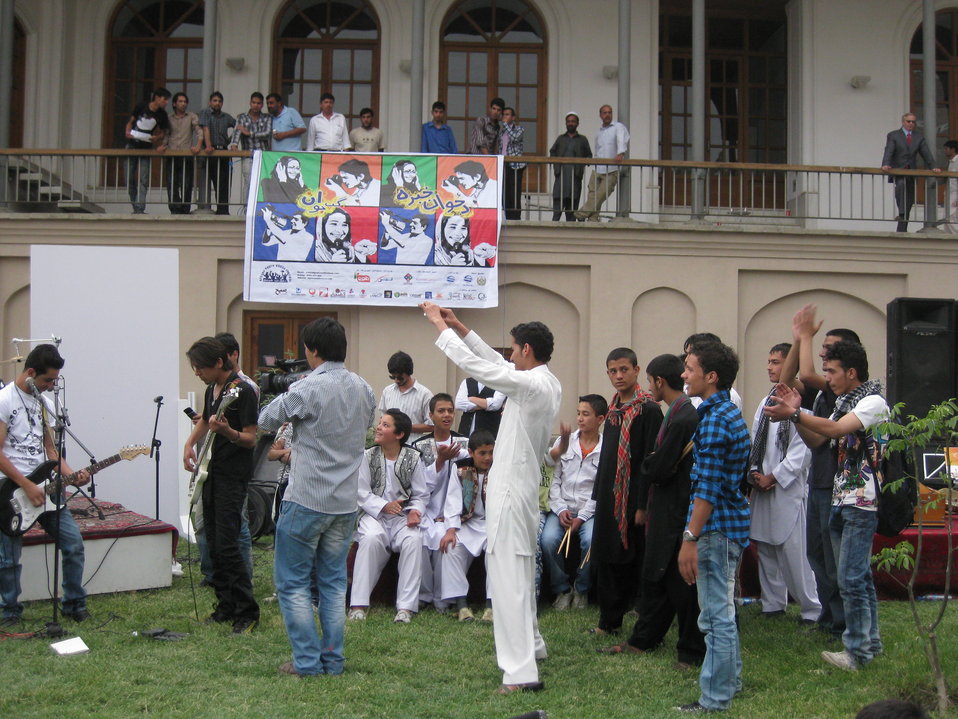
Afghan Youth Voices 110